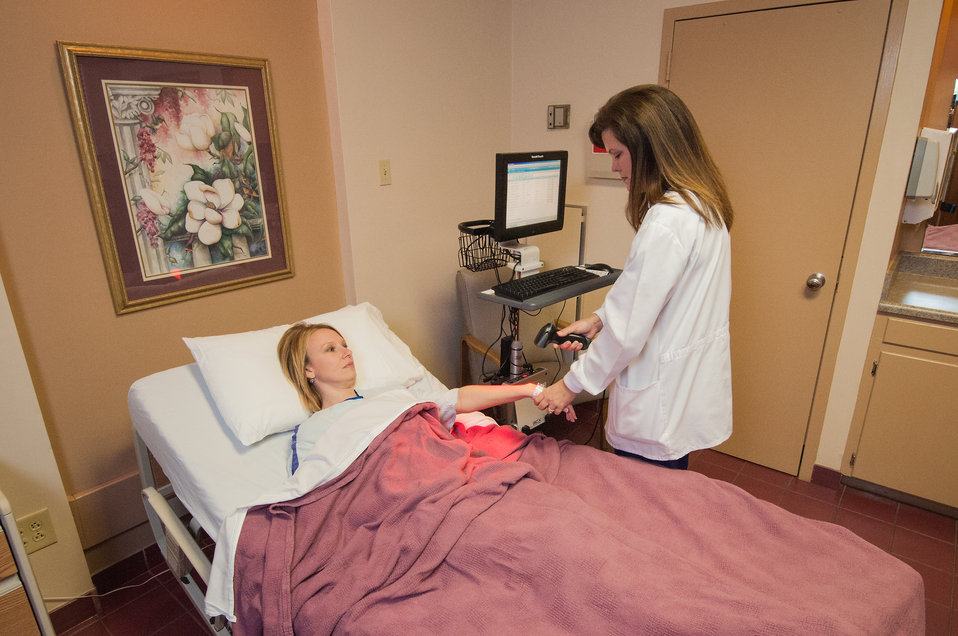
R.J. Taylor Memorial Hospital, Inc. Licensed Practical Nurse Dora Cater, LPN scans patient’s wristband with a hand held scanner to verify the patient’s information with the hospitals Electronic Medical Records data in Hawkinsville, GA on Mar. 6, 2013. Electronic Medical Records are essentially an electronic point-of-care capture of medical data that can be easily accessed and allow for integration across different health care settings by being embedded internet-work connected enterprise wide information systems. Such records may include a wide range of data in comprehensive or summary, immunization status, laboratory test results, radiology images and billing information. Patient data stored electronically is simplified for data gathering for running needed organizational, state, and Federal reports. R.J. Taylor Memorial Hospital, Inc. has purchased an Electronic Medical Records System under an incentive program by the Federal government through the U.S. Department of Agriculture (USDA) Rural Development (RD) Community Facilities Loan (CF) that ensures fiscally responsive access to superior quality integrated health care.